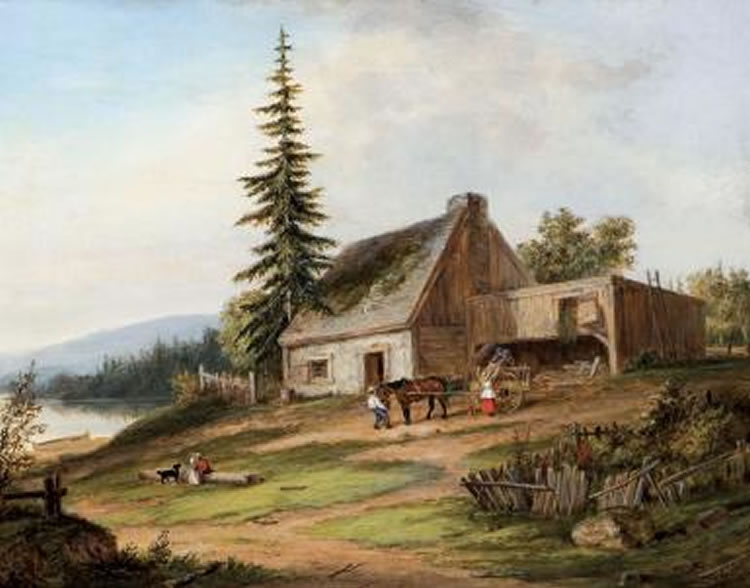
A Pioneer Homestead, oil painting by Cornelius Krieghoff, 1854, 12.4 x 16 in.